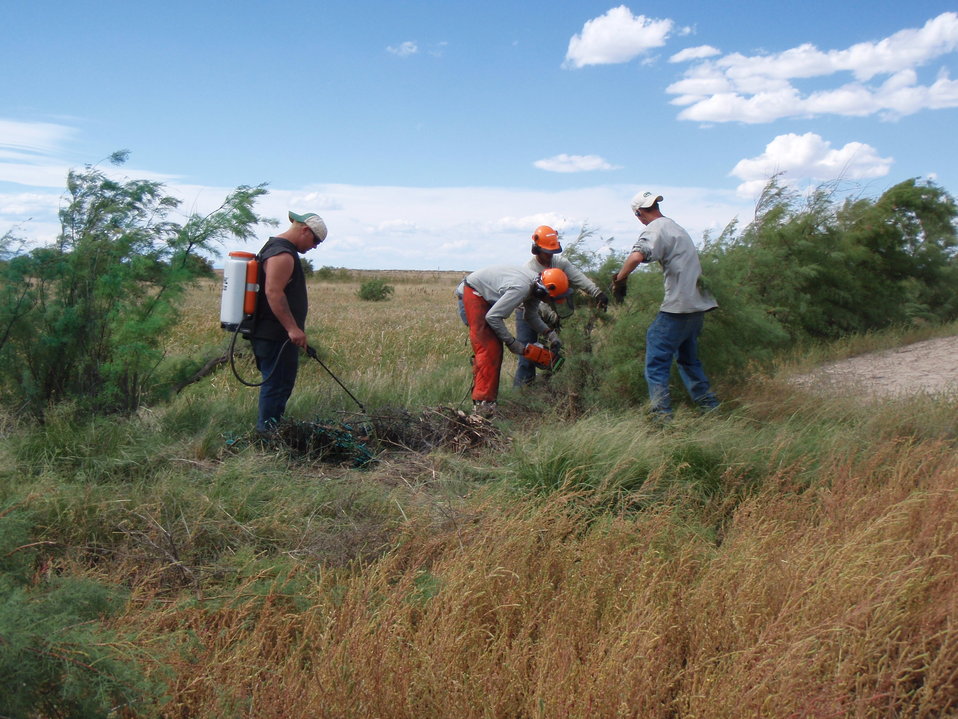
Invasive Tree Removal

A Mile High Youth Corps work crew uses stump-cutting techniques to remove invasive trees in southeast Colo.

The project was funded by the U.S. Fish and Wildlife Service’s Partners for Fish and Wildlife program, whose habitat restoration projects are extraordinary engines for the U.S. economy. Restoration Returns: The Contribution of Partners for Fish and Wildlife Program and Coastal Program Projects to Local U.S. Economies finds that, in working directly with partners to implement vital on-the-ground habitat restoration, Service programs created more than 3,900 jobs in Fiscal Year 2011, generating a total economic stimulus of $327.6 million.

The “restoration economy” is a subset of green jobs that includes such industries as heavy equipment providers and operators, plant nurseries, landscape architects, and construction companies, among other firms.

Download the entire report at: www.fws.gov/home/restoration returns.html.